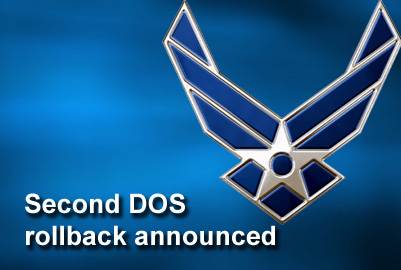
DOS rollback